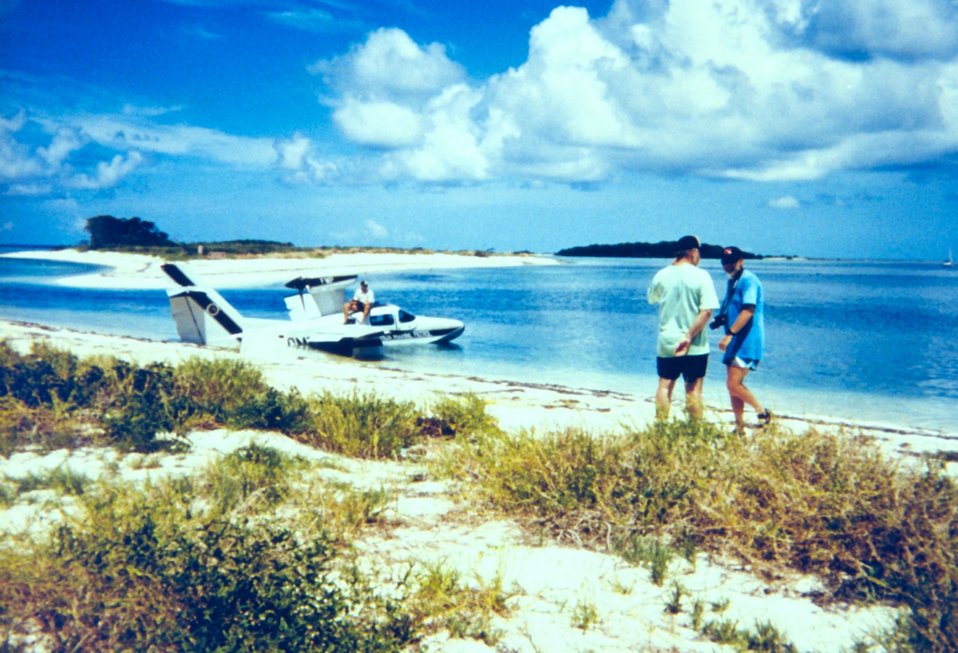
An amphibious plane at Fort Jefferson